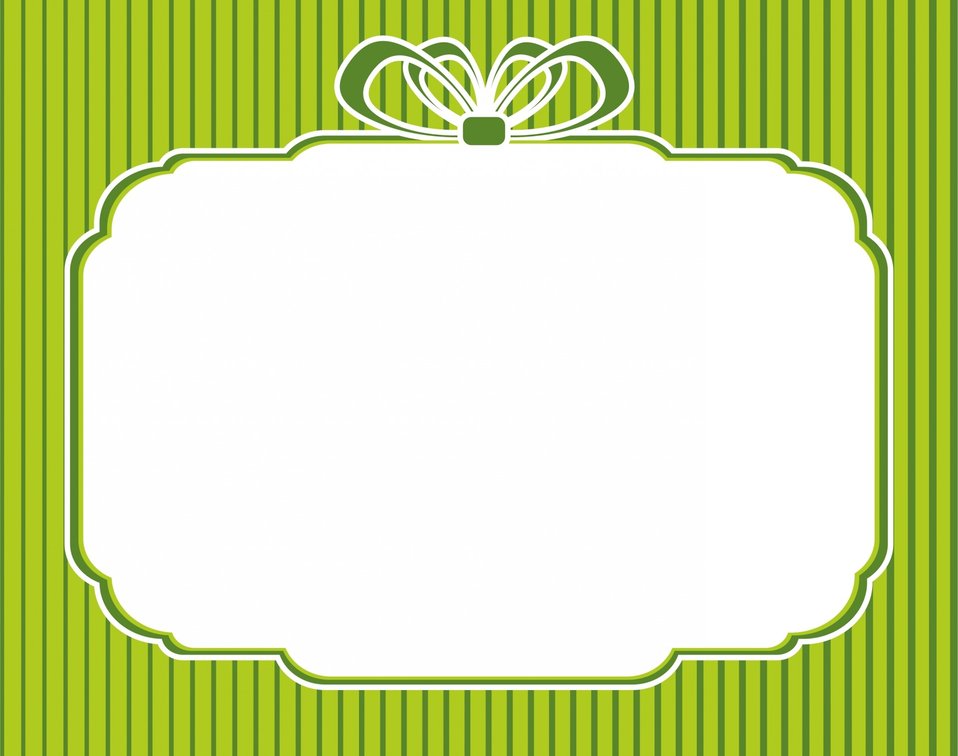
Abstract background

Green abstract background.